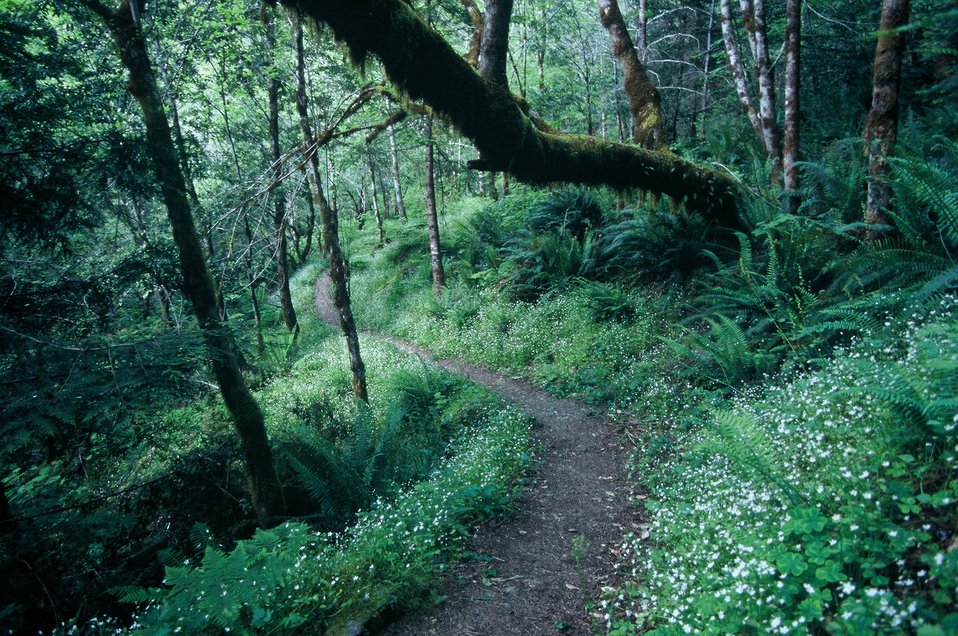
Wild section of the Rogue River from Grave Creek to Foster Bar May 19 to May 22.